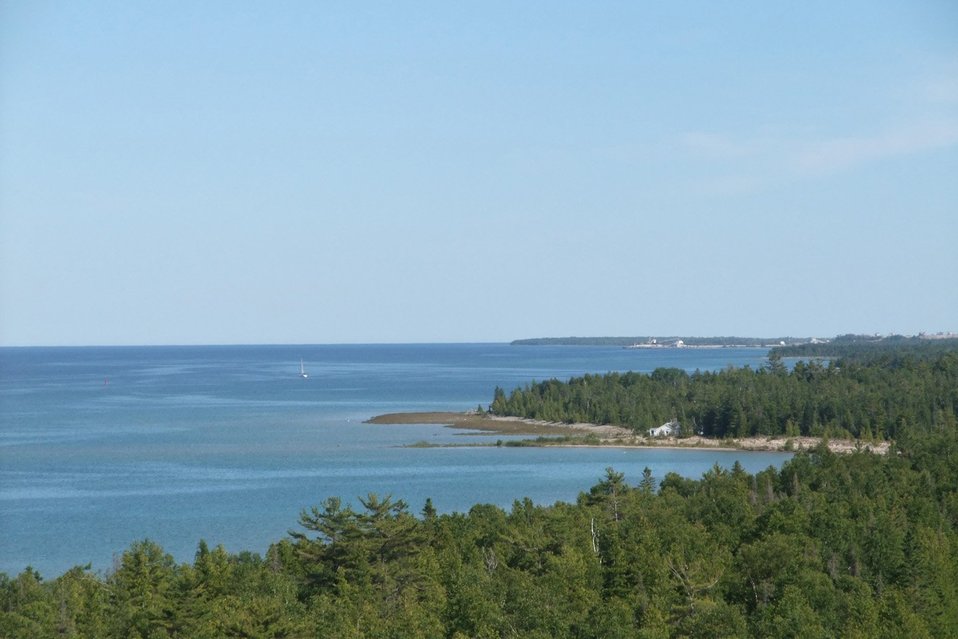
Lake Huron shoreline from Presque Isle lighthouse